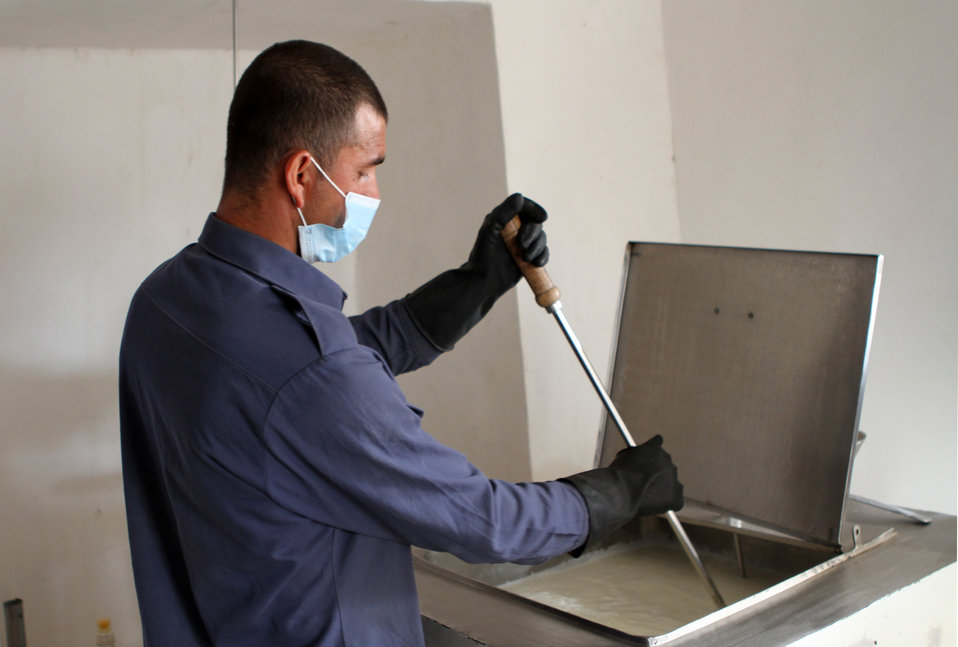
USAID funded Milk Processing Center